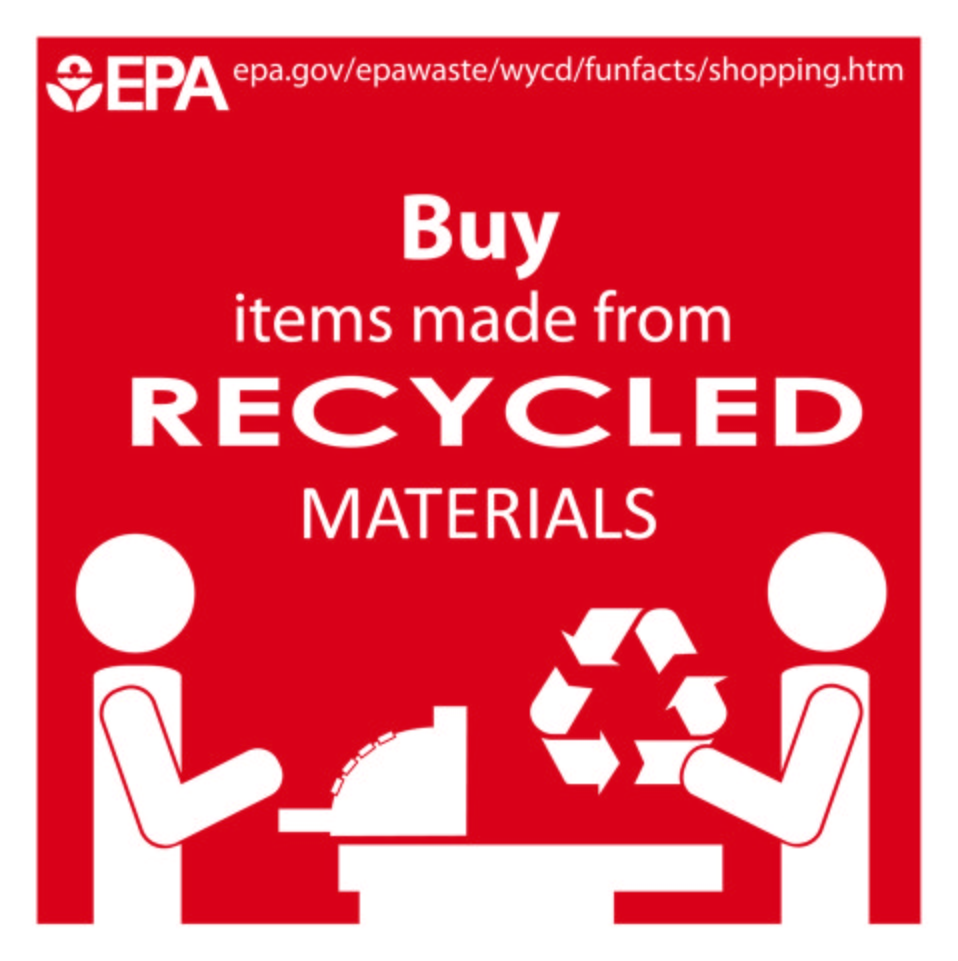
Buy Recycled

Do you recycle? When you shop, remember to buy goods made from recycled materials.